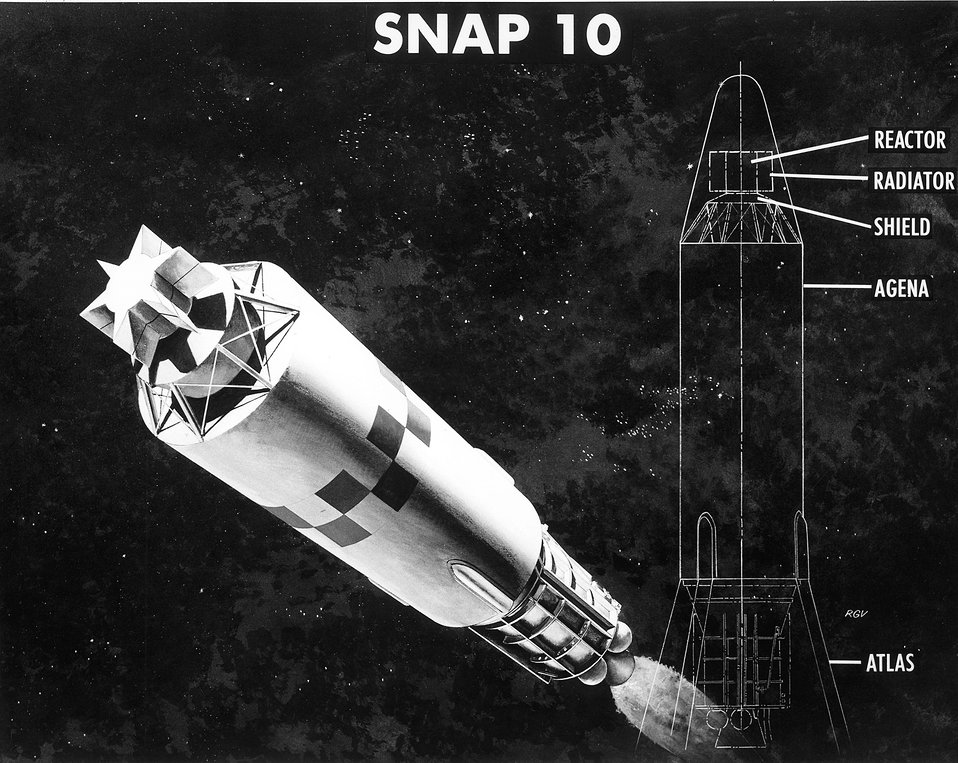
Artist's concept of a SNAP 10.